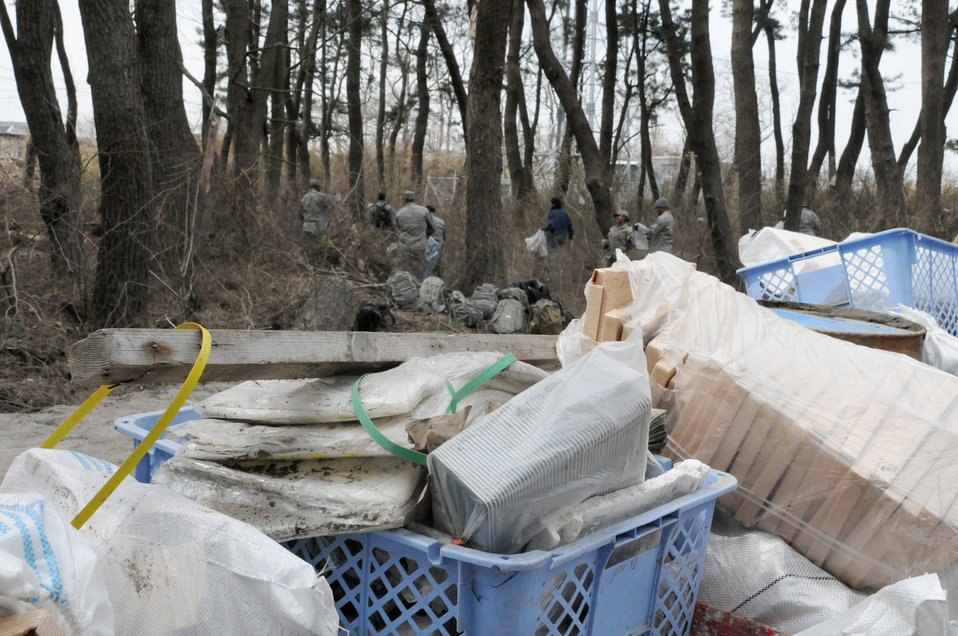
Misawa Airmen continue relief efforts

Airmen and other Misawa Air Base residents collect debris from a wooded area April 7, 2011, during a humanitarian relief mission in Hachinohe, Japan. The Airmen are assigned to the 35th Security Forces Squadron.